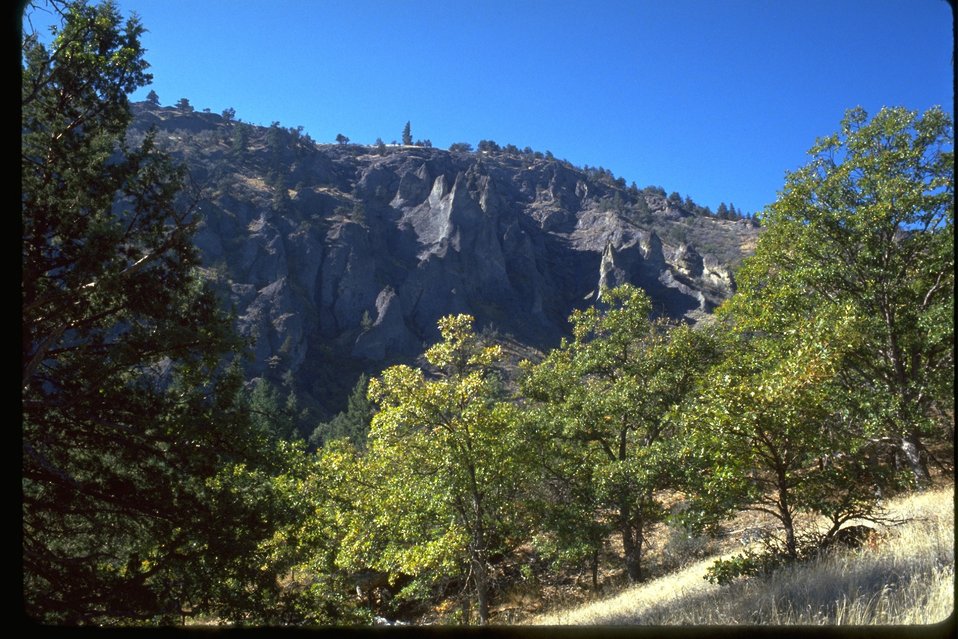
Lower Camp Creek and Cathederal Cliffs.